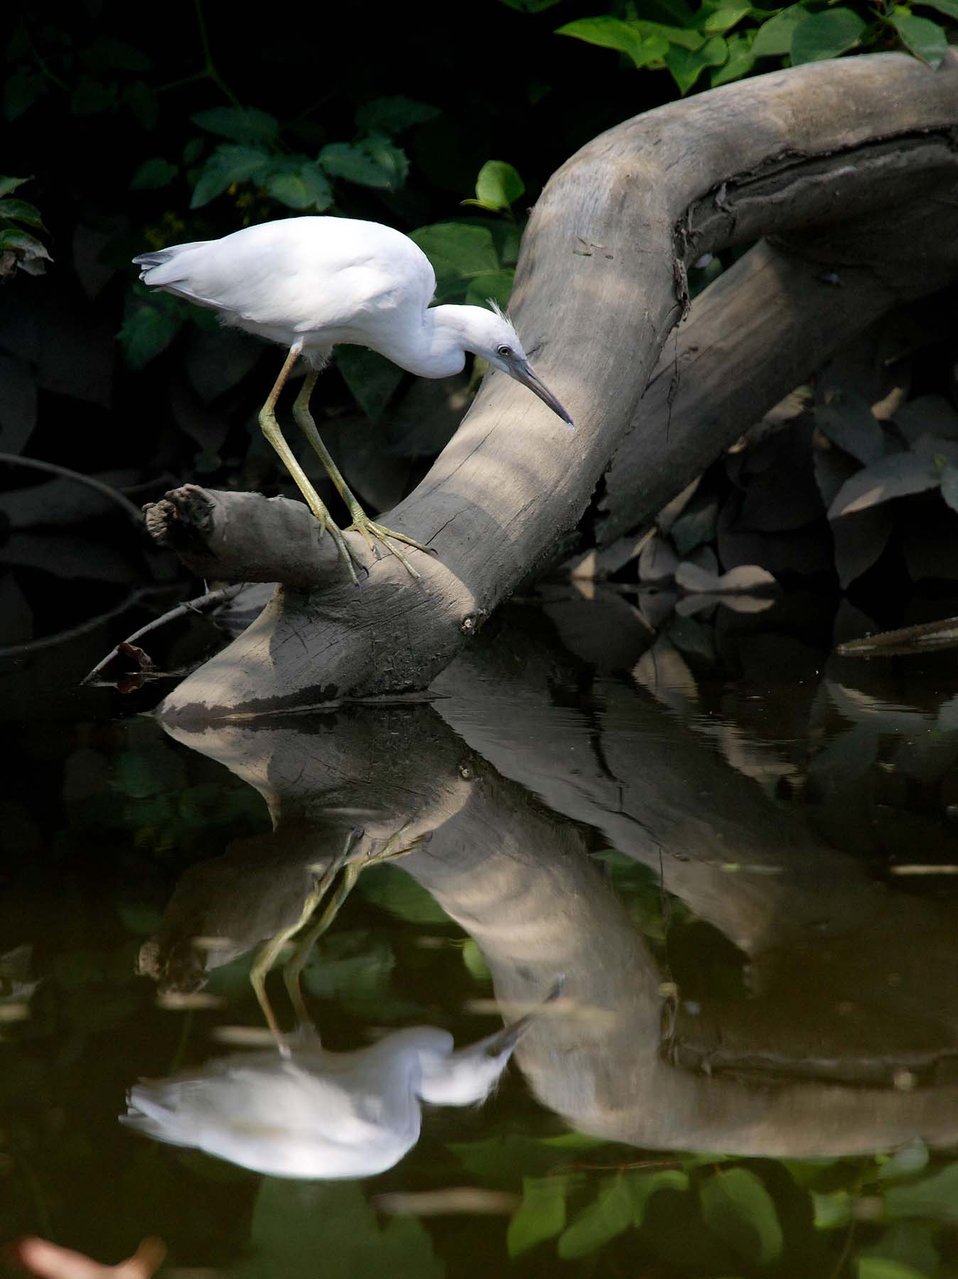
Juvenile little blue heron at John Heinz National Wildlife Refuge in Philadelphia, Pennsylvania.